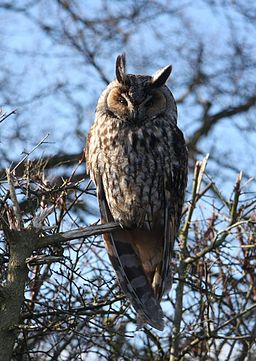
Long-eared owl